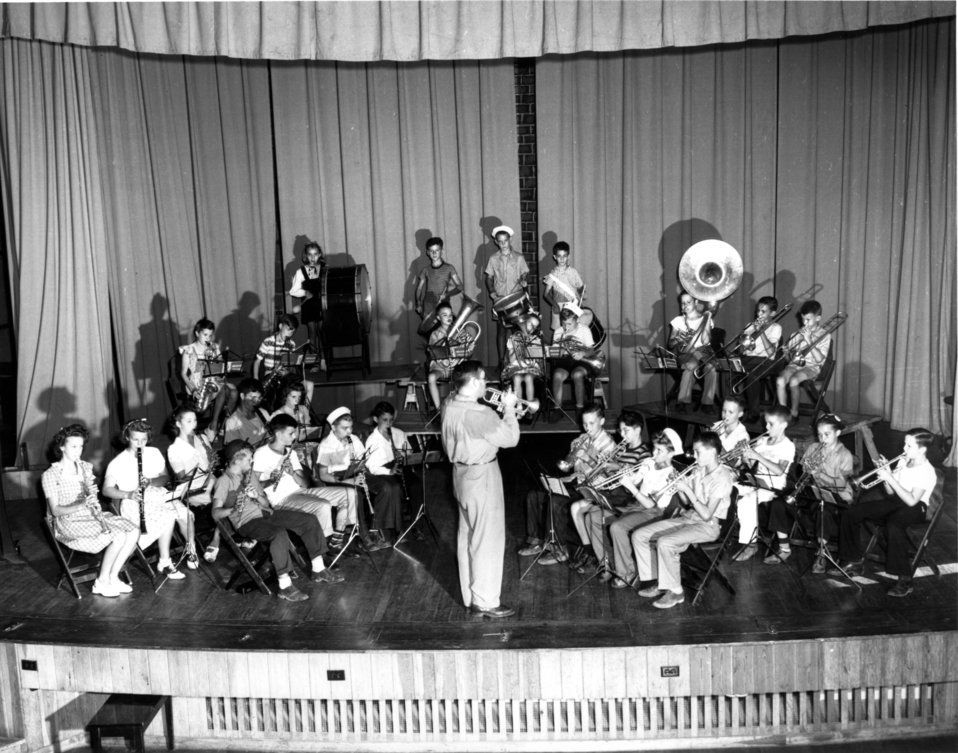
Schools at Oak Ridge